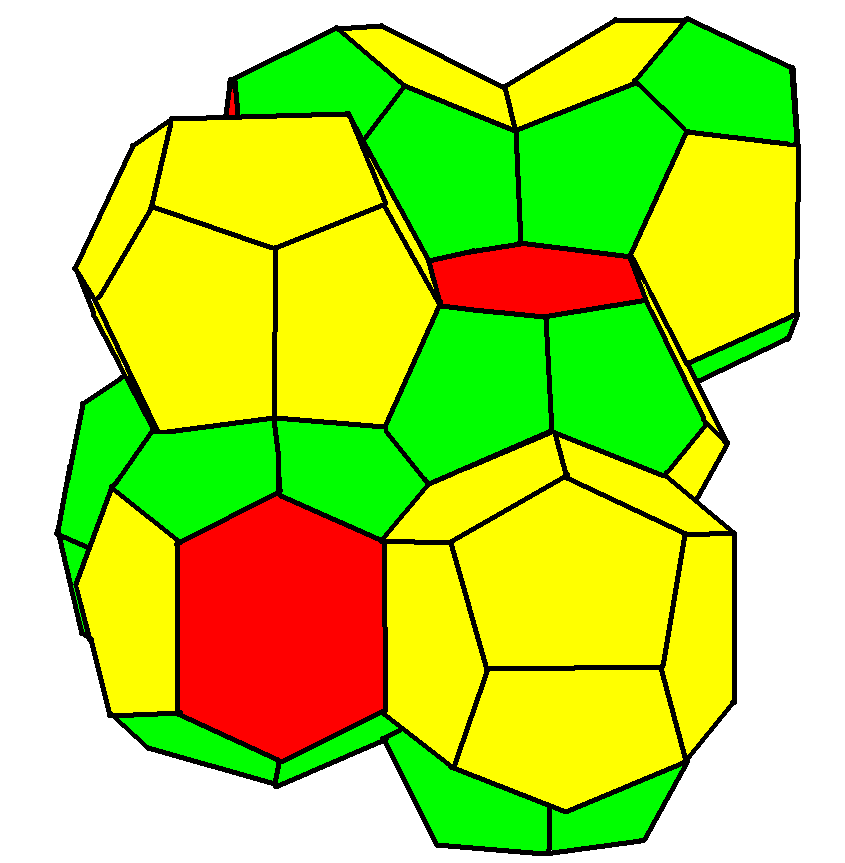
Honeycomb image traced and recolored from B&W diagram at [1]